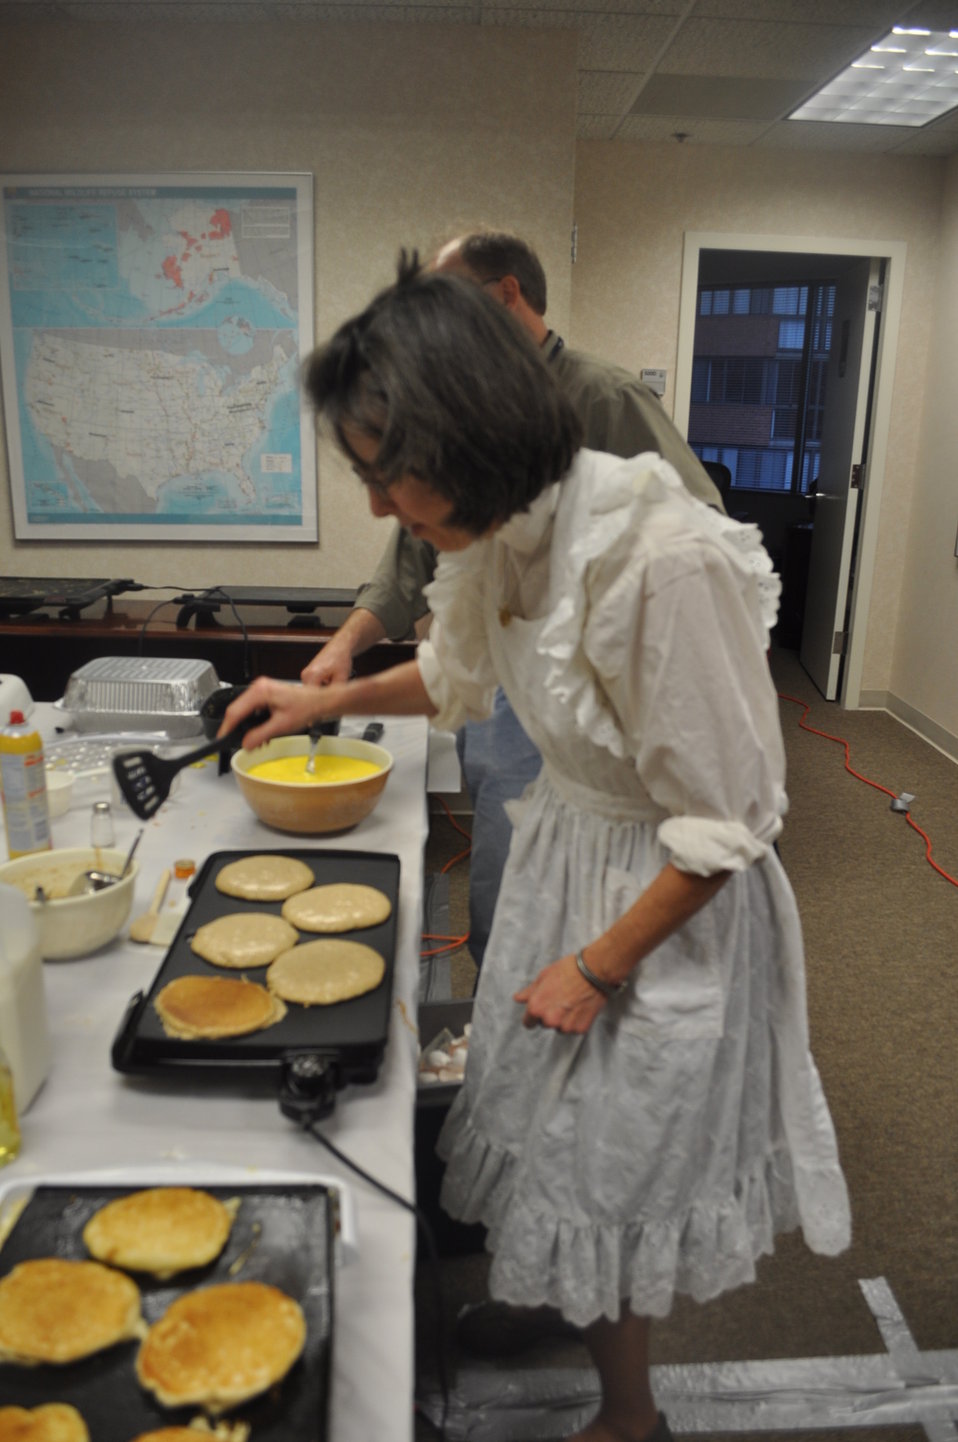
Nancy Roeper cooks pancakes